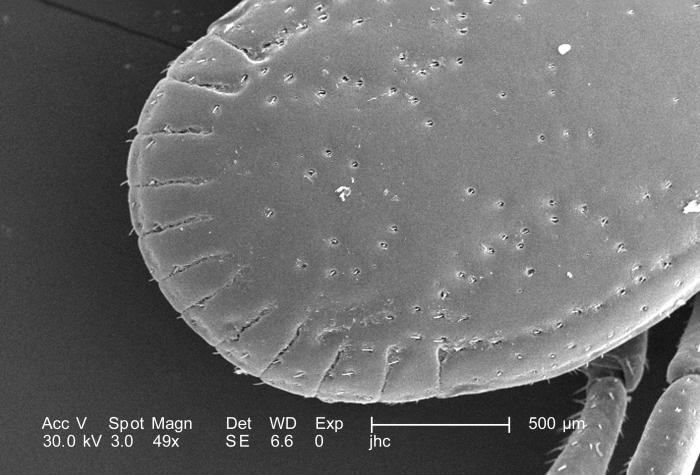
Under a low magnification of 49X, twice that of PHIL 9959, this scanning electron micrograph (SEM) depicted a dorsal view of an unidentified male Dermacentor sp. tick found upon a cat in the suburbs of Decatur, Georgia, which measured approximately 3.5mm from its gnathosoma (i.e., capitulum), which is where its mouthparts are located, to the distal abdominal margin. Note that the entire dorsum of this tick's abdomen is covered by its tough 'scutum', or 'shield', categorizing it as a male, whereas, in female Ixodid-species ticks, the scutum only partially covers the dorsal abdomen. The ridges running along the distal abdominal border are known as 'festoons'.